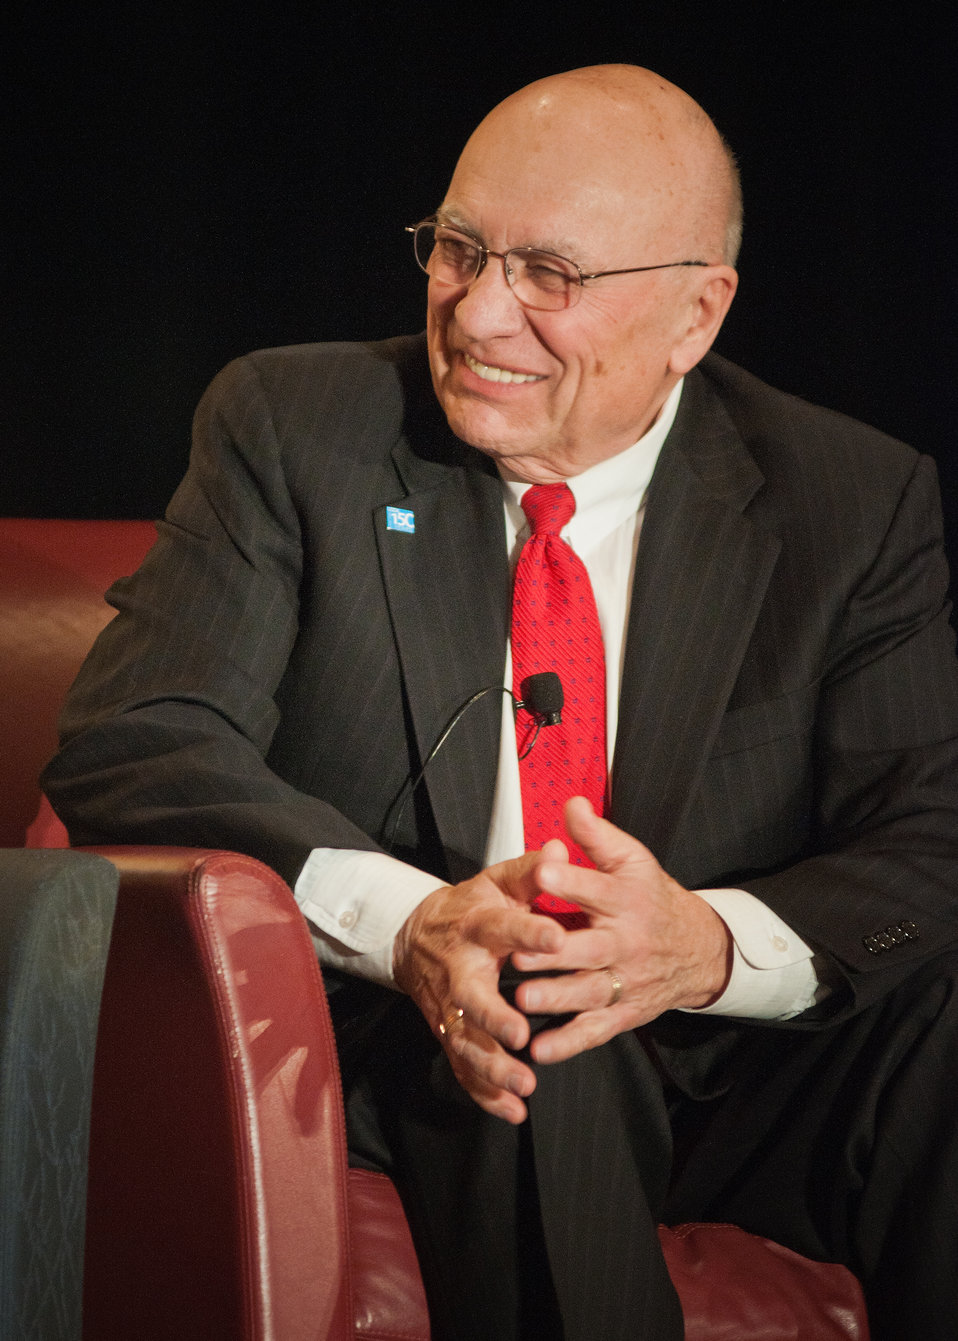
At the 2012 Agricultural Outlook Forum, “Moving Agriculture Forward” in Arlington, VA, held on Thursday, February 23, 2012, 7 former Secretaries of Agriculture sat on the plenary panel “Visions of the Future” hosted by current Agriculture Secretary Tom Vilsack. Clayton Yeutter laughs at remarks during the panel discussions.